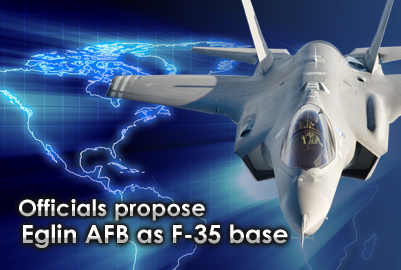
Officials recommend preferred alternative for F-35 basing at Eglin AFB